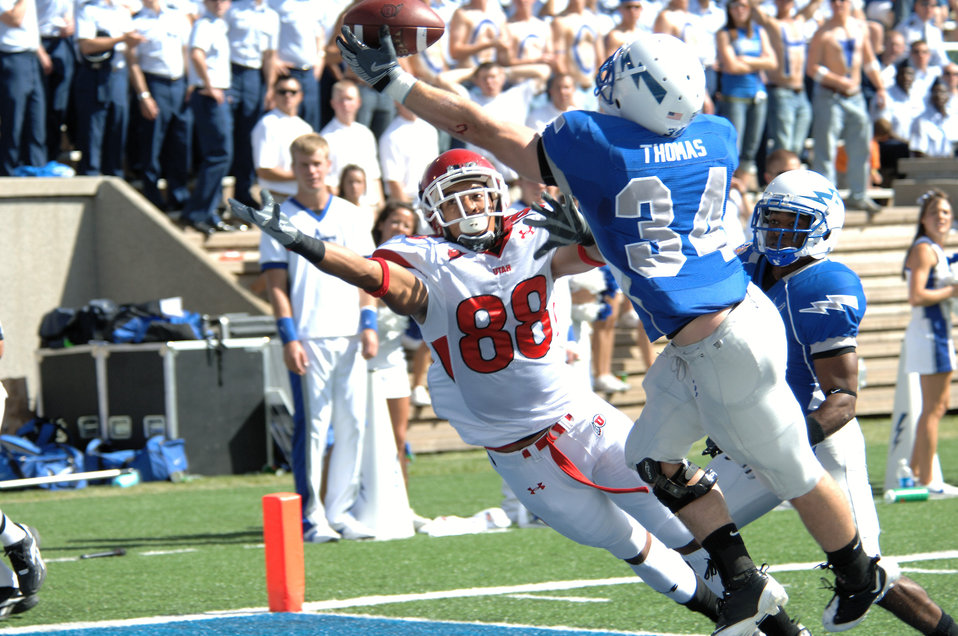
Football: Utah downs Air Force 30-23

U.S. Air Force Academy safety Chris Thomas stretches to deflect a pass intended for Utah wide receiver Freddie Brown while Falcons cornerback Reggie Rembert trails Sept. 20 at the Academy in Colorado. Rembert hauled in the deflection for an interception in the end zone, ending the Utah drive.